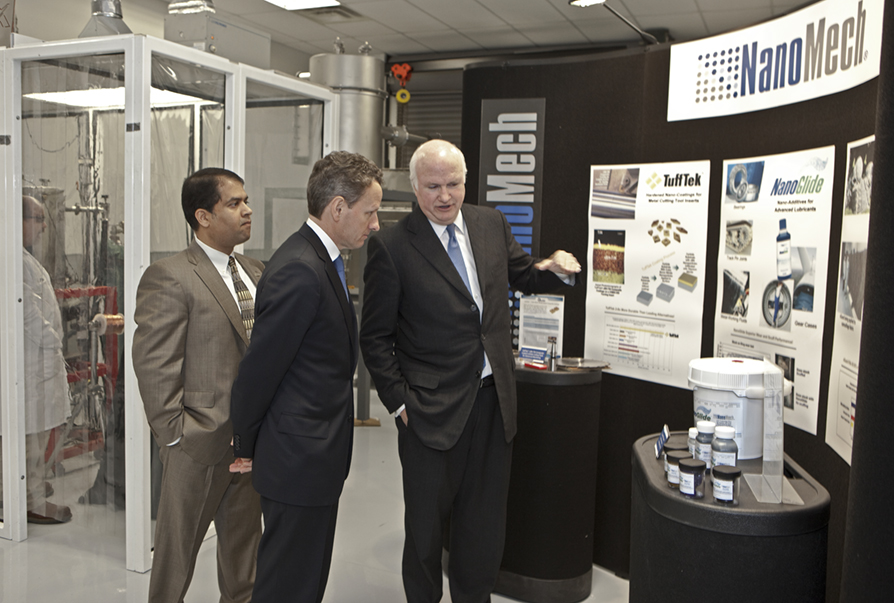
VIsit to Northwest Arkansas, 3/25/2011

Following his roundtable meeting with regional business leaders, Secretary Geithner visited the manufacturing plant and labs of NanoMech, an award-winning, innovative small business that uses nanotechnology to manufacture products with broad applications, including machining and manufacturing, lubrication and energy, and biomedical implant coatings.